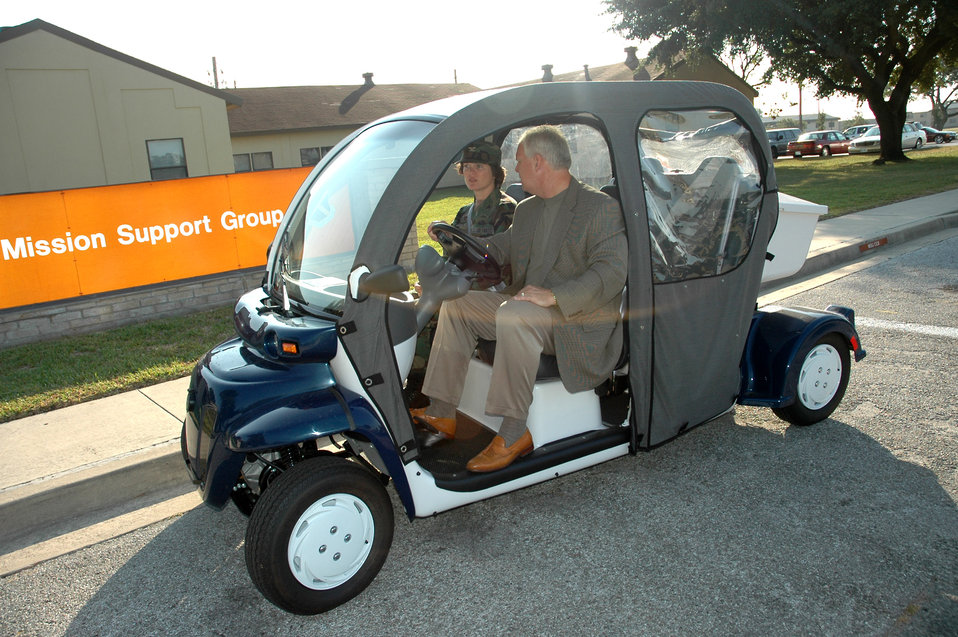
MSG electric cars cut costs

LACKLAND AIR FORCE BASE, Texas -- Col. Thelma Hales (left) and George DeCoux test one of the new Global Electric Motorcars this base is using to conserve energy. The GEM seats four people and can travel at 25 mph. The colonel is commander of the 37th Mission Support Group at this training base. Mr. DeCoux is the unit's deputy for installations.